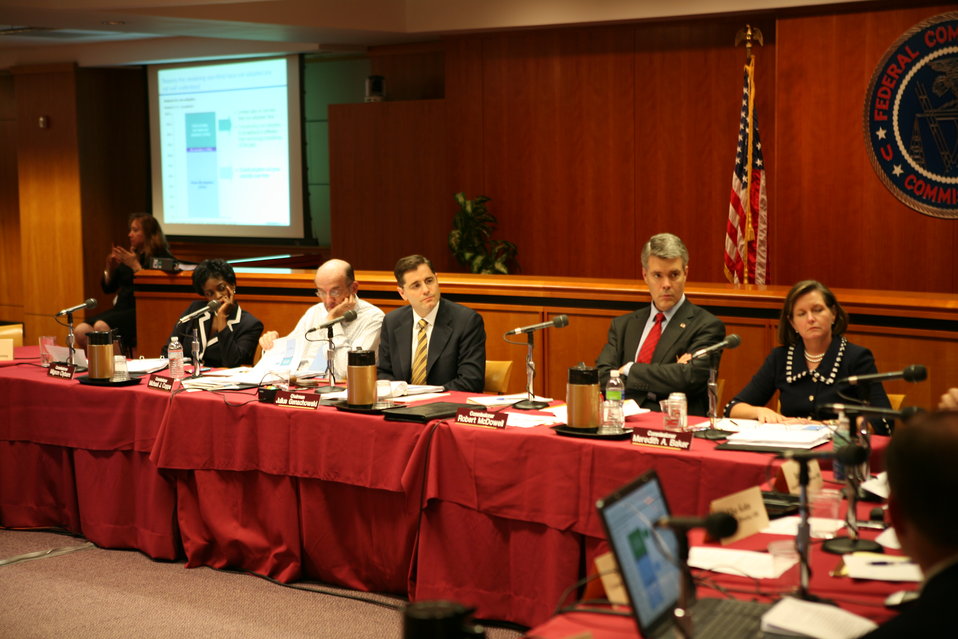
Midterm Review15

Broadband Midterm Review, 9-29-09